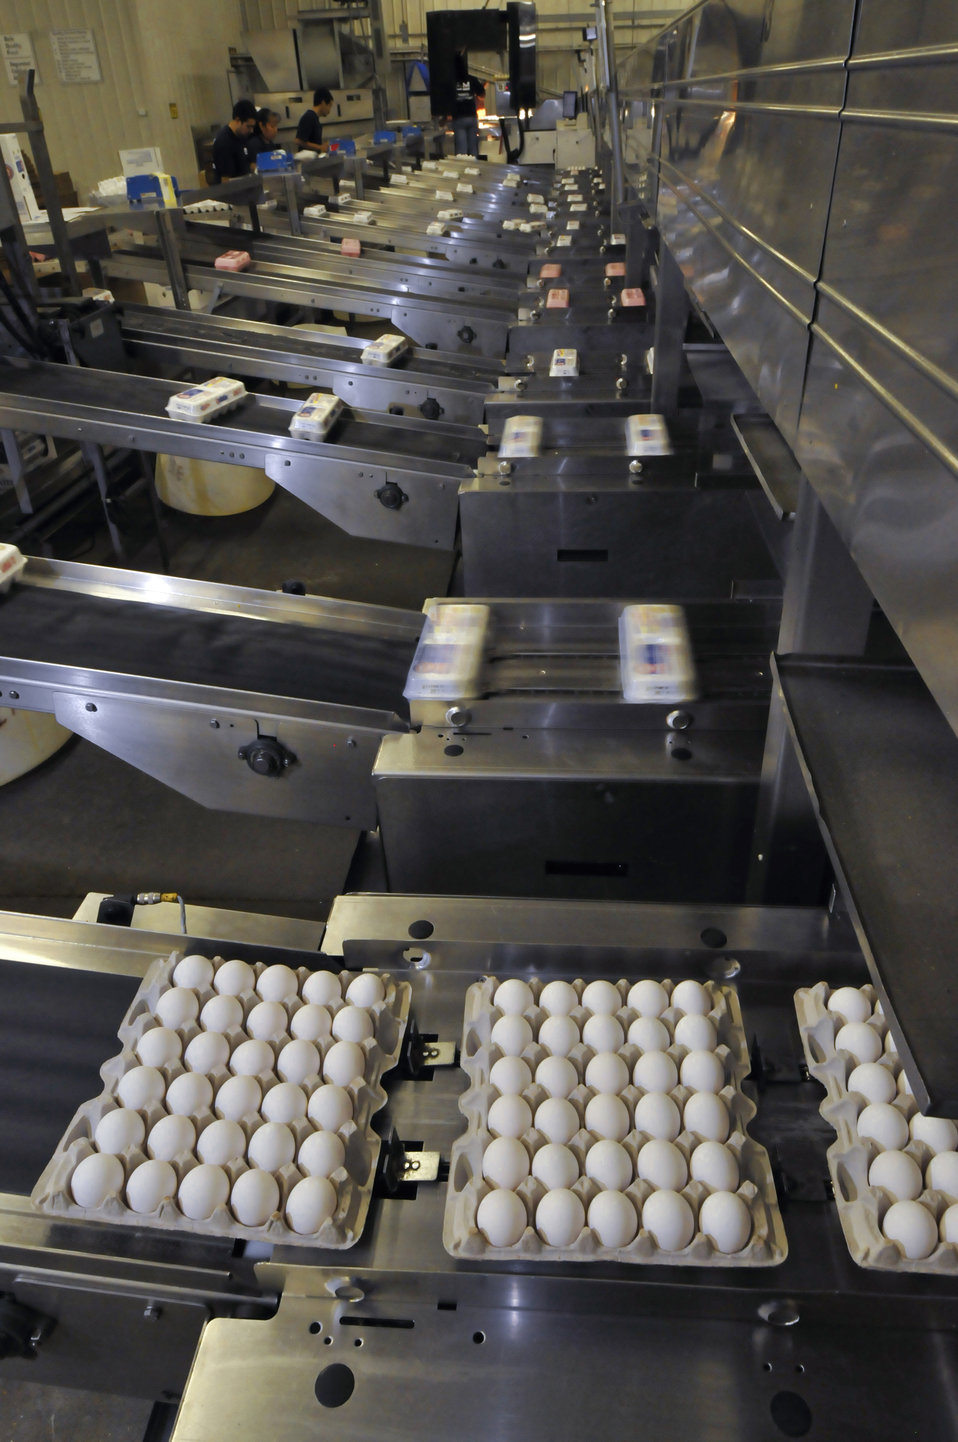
Shell eggs are graded at Cal-Maine Foods Inc. in Green Forest, Arkansas by the U.S. Department of Agriculture (USDA) Agricultural Marketing Service (AMS) on March 24, 2010. Shell eggs are produced on farms with a few thousand laying chickens or in large laying complexes with over a million layers. All shell eggs are eligible for the grading and certification services provided by the USDA AMS Poultry Programs.